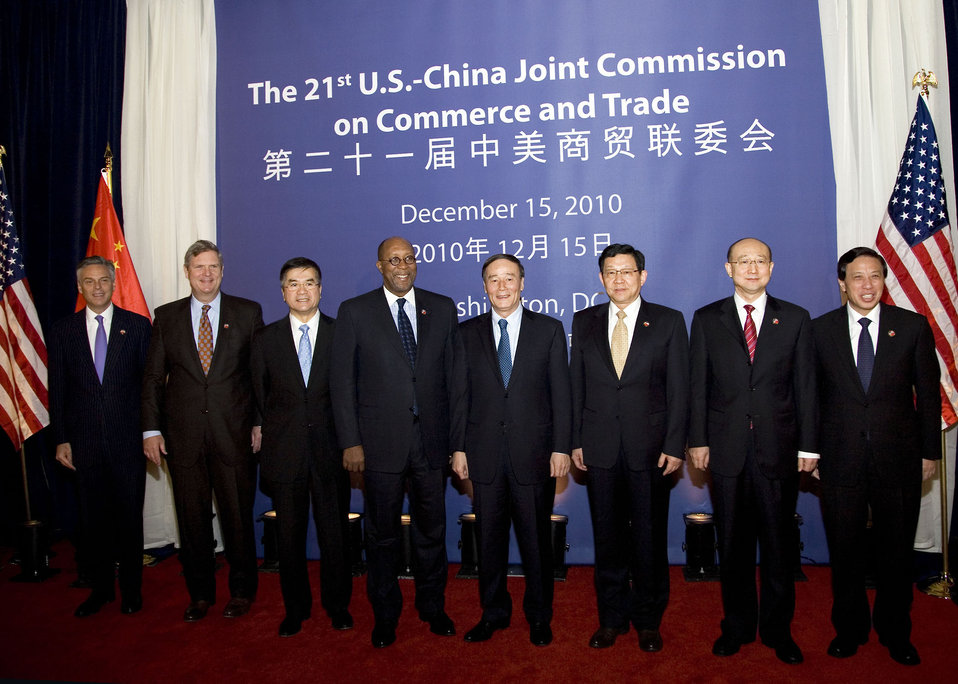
Co-chairman of the 21st session of the U.S. - China Joint Commission on Commerce and Trade (JCCT). The JCCT resulted in an agreement with China for significant intellectual property rights enforcement initiatives, market opening, and revisions to its indigenous innovation policies that will help boost U.S. exports. The JCCT was held at the Commerce Department in Washington, D.C., on Wednesday, December 15, 2010. (L to R U.S. Ambassador to China Jon Huntsman, Agriculture Secretary Tom Vilsack, Commerce Secretary Gary Locke, U. S. Trade Representative Ron Kirk, Chinese Vice Premier Wang Qishan, Chinese Minister of Commerce Chen Deming, Chinese General Administration of Quality Suprvision, Inspection, and Quaraine Minister Zhi Shuping, and China's Ambassador to the U.S. Zhang Yesui). USDA photo 10di1573-7996.